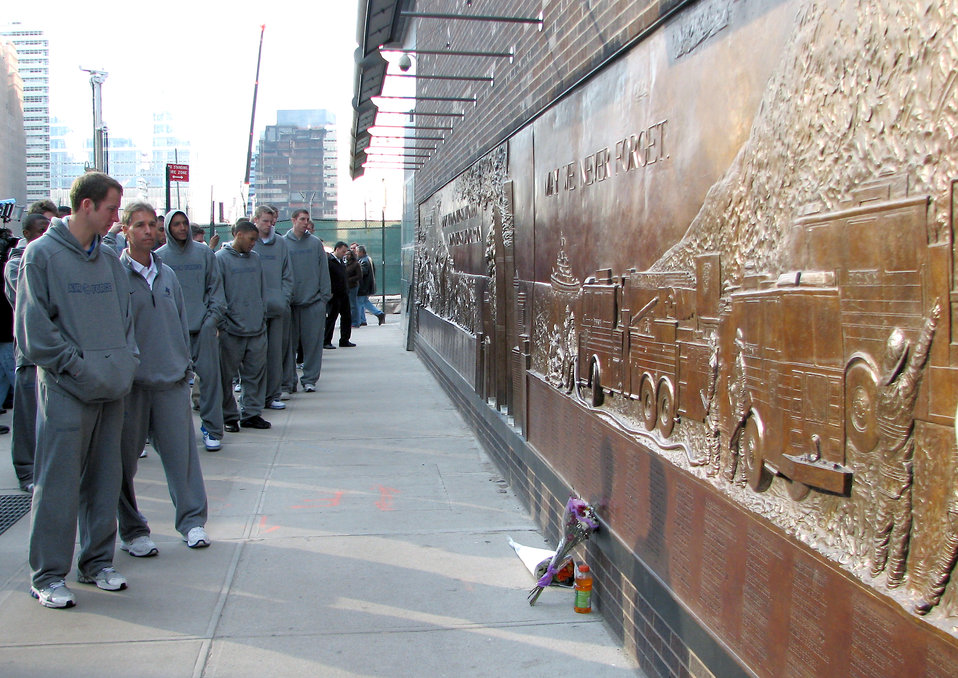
Academy Falcons tour New York

The U.S. Air Force Academy men's basketball team's views the Ladder 10 memorial at Ground Zero March 25 in New York City. The team is playing in the National Invitation Tournament semifinals March 27 against the Clemson Tigers in Madison Square Garden.